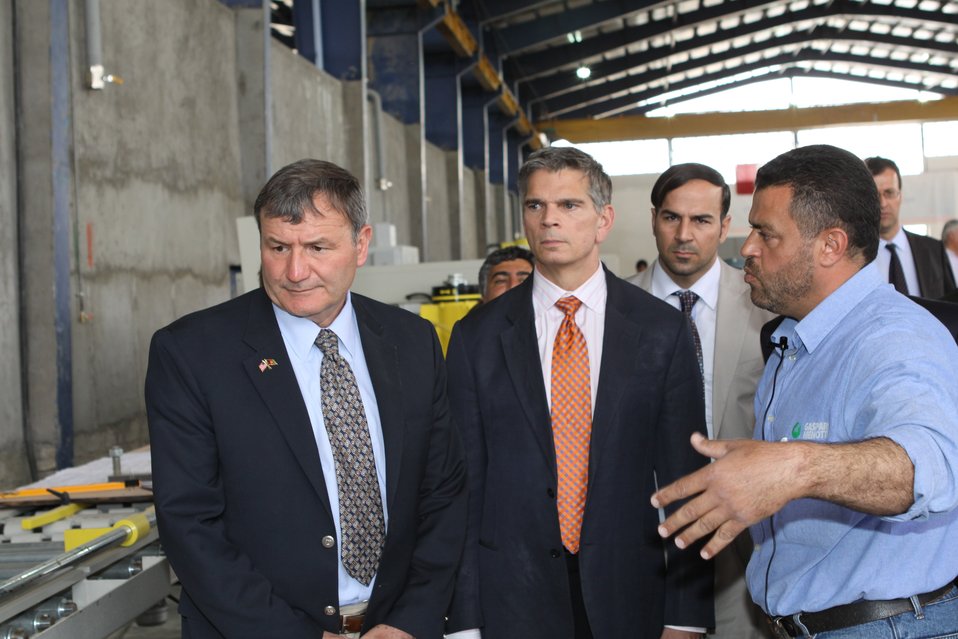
100525 Hirat Marble Conference 396